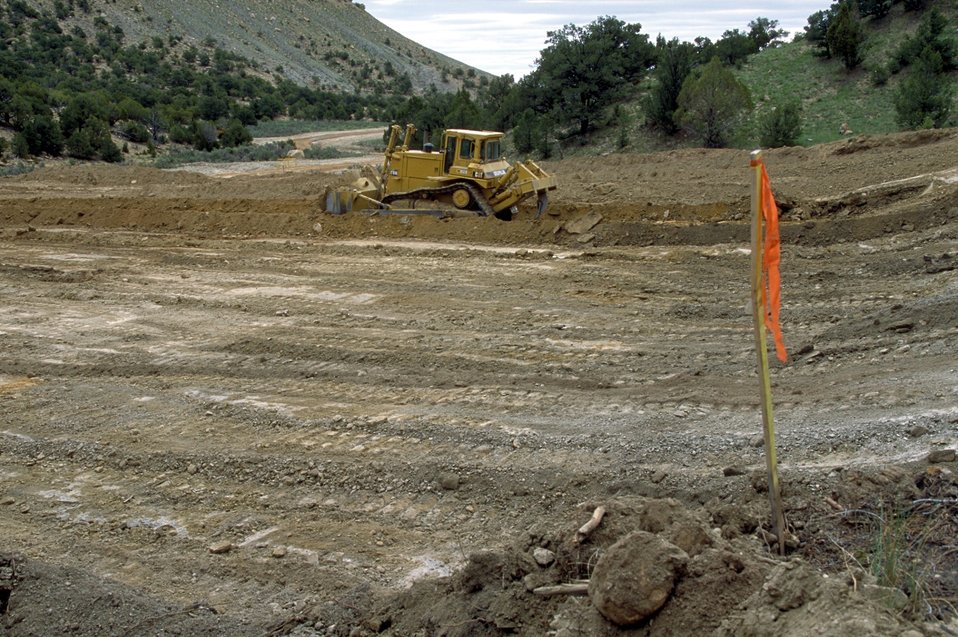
Building a drill pad for coal bed methane production near price, Utah.